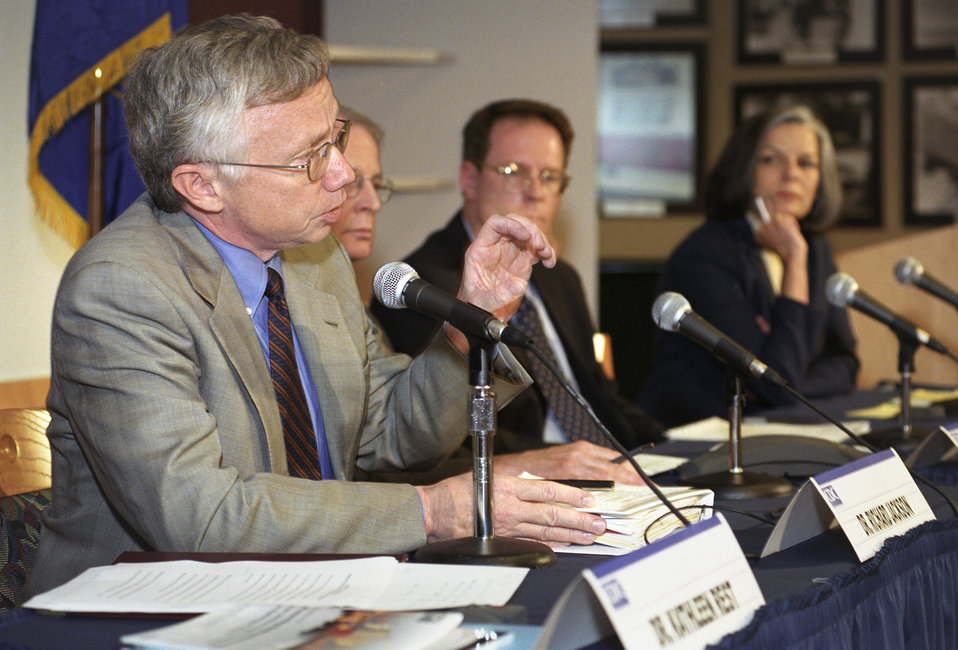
Centers for Disease Control and Prevention Bioterrorism Preparedness Press Briefing, August 27, 2002.